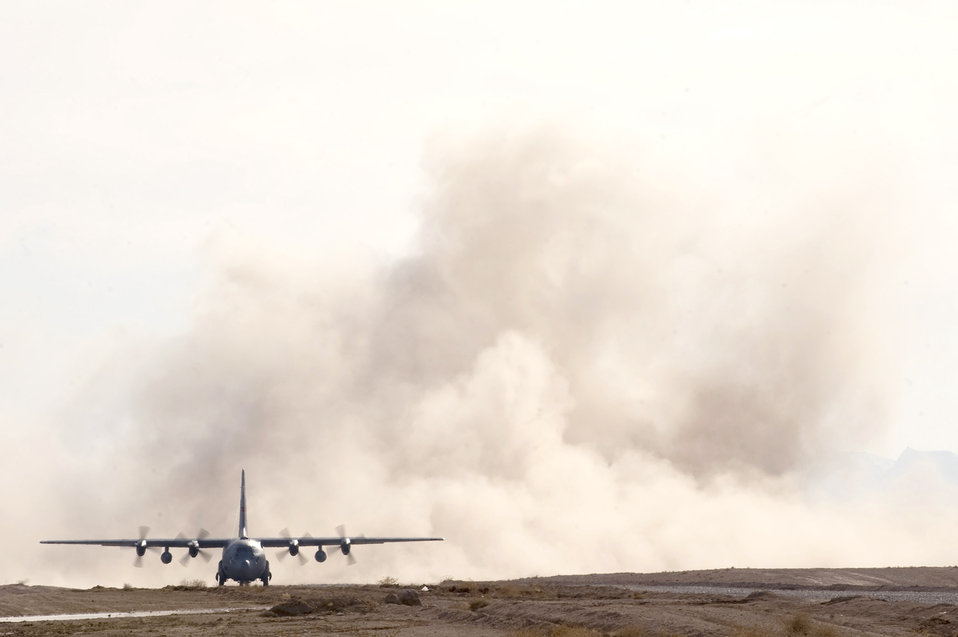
Off in a cloud of dust...

A C-130 Hercules prepares to depart a dirt landing zone Feb. 16, 2011, in Zabul province, Afghanistan.